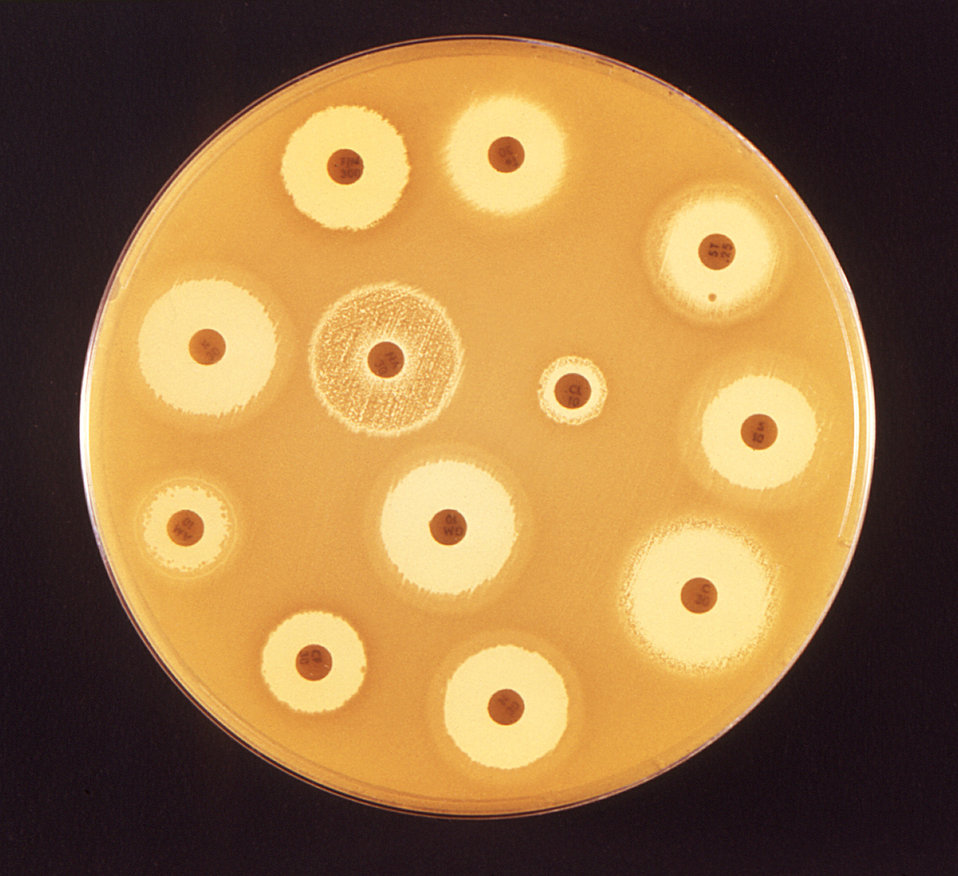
This 1972 image depicted a Mueller-Hinton agar culture plate that had been used in an antibiotic susceptibility test (AST). Known as the Kirby-Bauer method, each of the small labeled discs, or wafers, contained an antibiotic cocktail. The light halos surrounding each disc, also known as 'reaction zones', represented regions in which the bacteria on the agar's surface did not thrive, due to their sensitivity to the antibiotic that had been soaked into these respective discs.